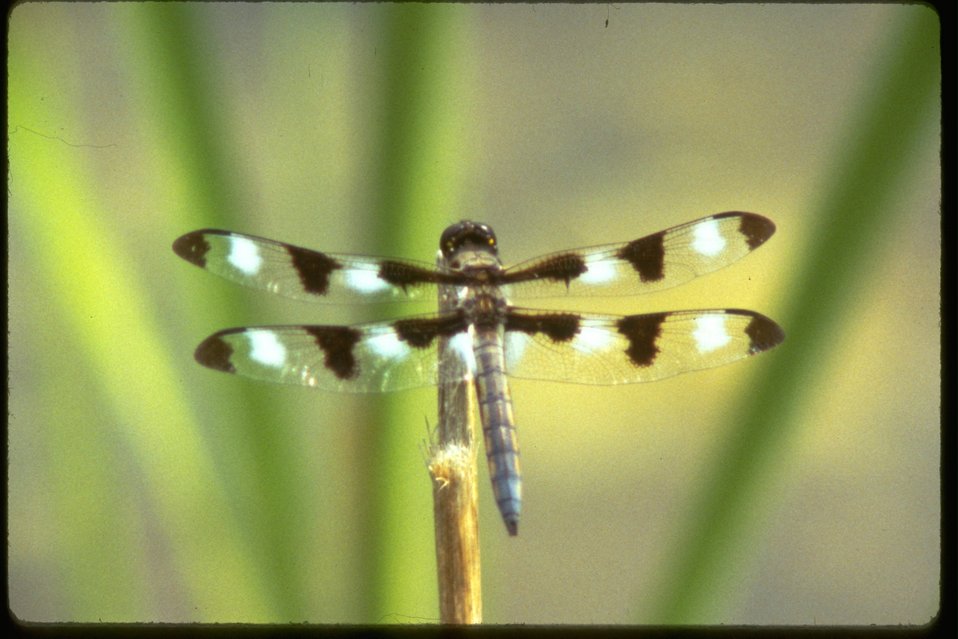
Insect: Dragonfly.